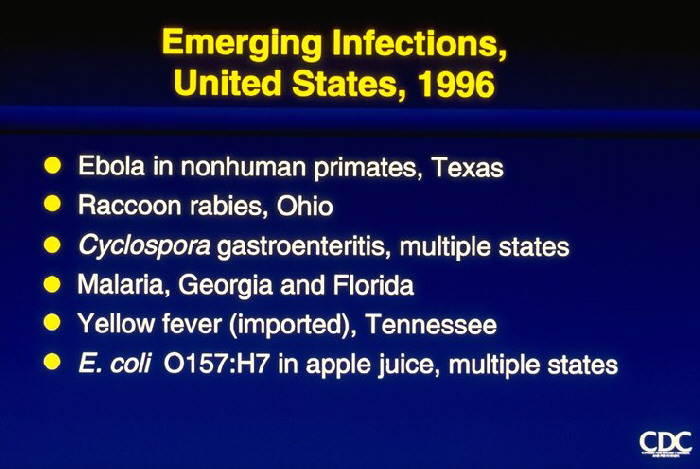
Emerging Infections, United States, 1996